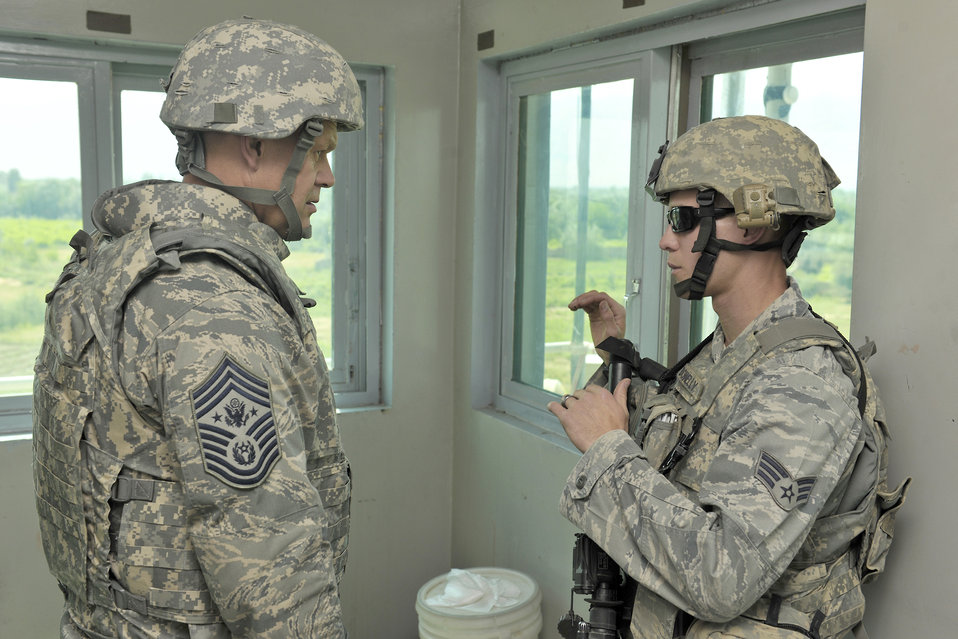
CMSAF visits Bagram

Senior Airman Keegan Donnelly and Chief Master Sergeant of the Air Force James A. Roy discuss the recent attacks June 25, 2010, at Bagram Airfield, Afghanistan. Airman Donnelly is a sentry assigned to the 455th Expeditionary Security Forces Squadron.